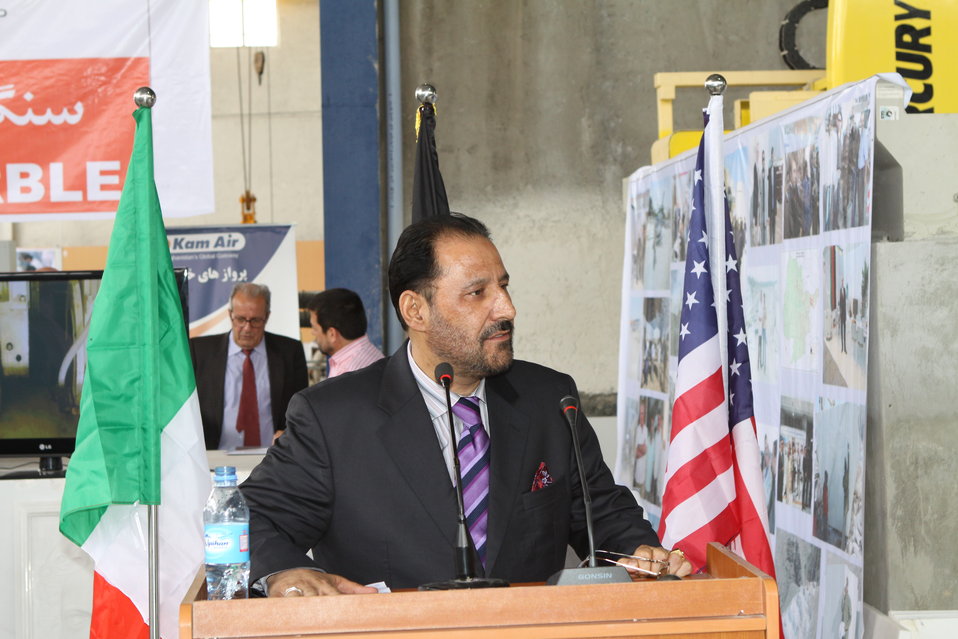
100525 Hirat Marble Conference 467